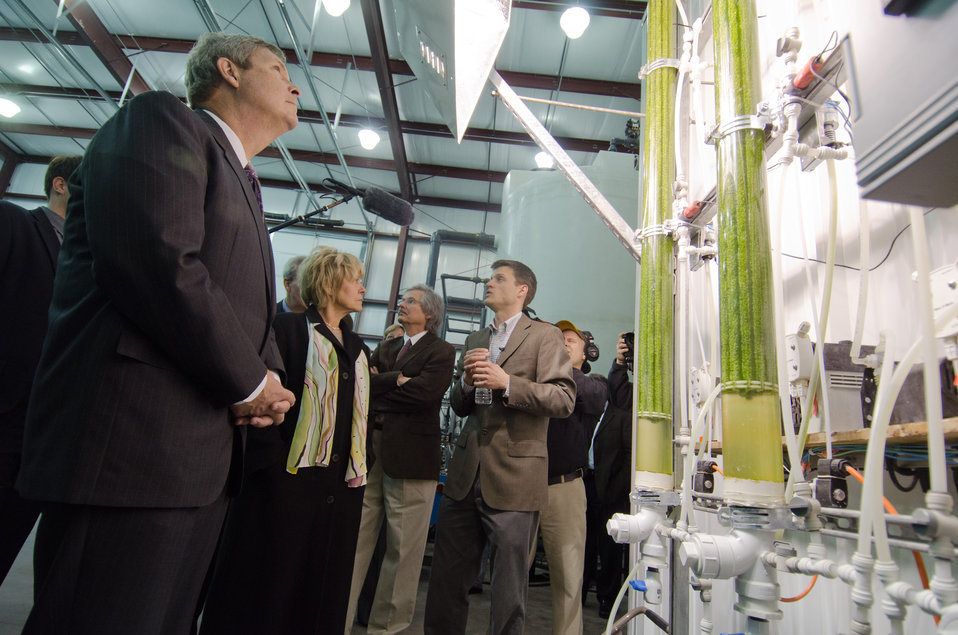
Agriculture Secretary Tom Vilsack and his wife Christie look at early test bioreactors before viewing the new commercial scale photo bioreactors/harvesters at Green Plains Renewable Energy (GPRE), Inc. in Shenandoah, IA, on Friday, Apr. 15, 2011. BioProcess Algae technology is used to treat waste products; carbon dioxide, recycled heat and water to mass-produce algae. Algae from this facility are used for animal feeds, pharmaceutical and beauty products.